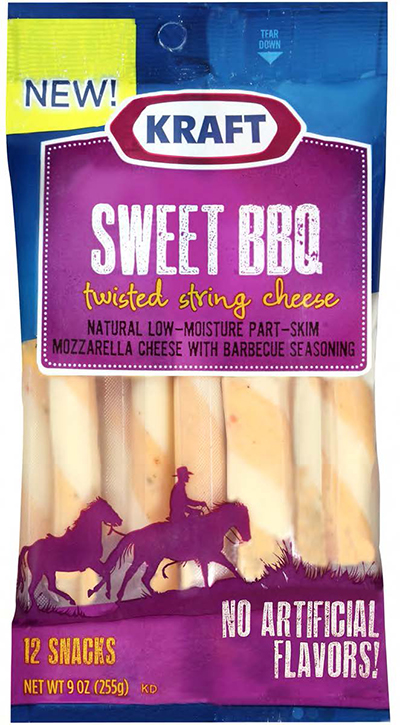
RECALLED – Cheese

October 25, 2013 – Product Recall – Kraft Voluntarily Recalls Some Varieties of Kraft And Polly-O String Cheese And String Cheese Twists Due to Premature Spoilage.